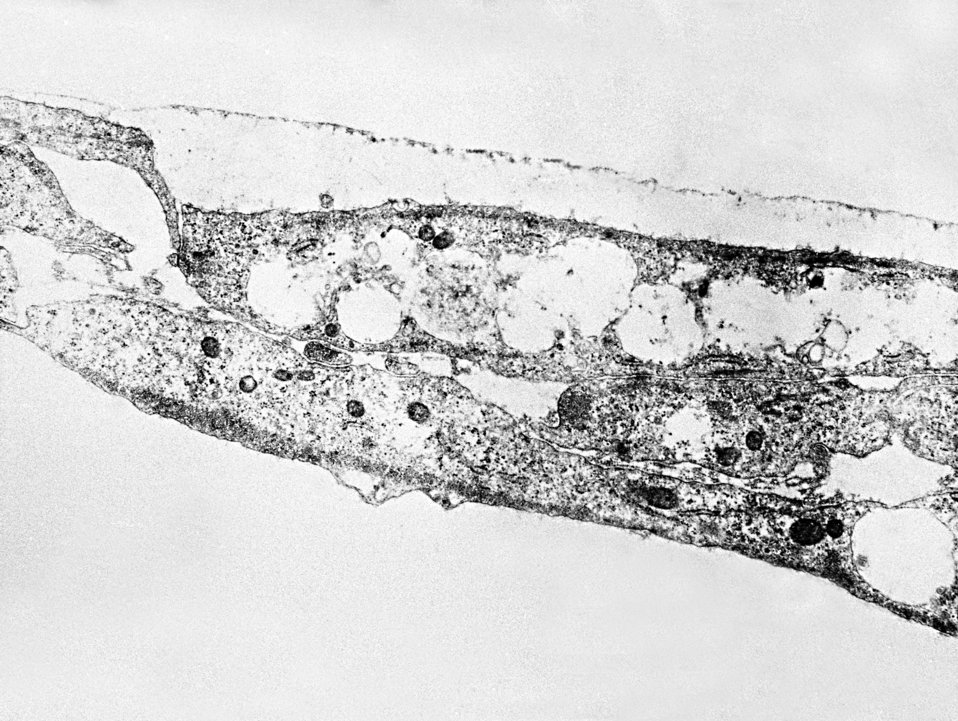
Electron micrograph of Treponema pallidum on cultures of cotton-tail rabbit epithelium cells (Sf1Ep).